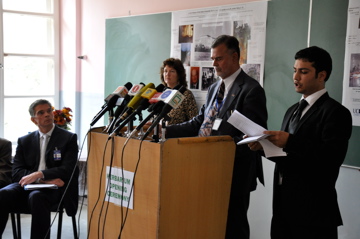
پوهنتون کابل لابراتوار نباتی را جهت حفظ میراث های نباتات افغانستان دوباره افتتاح نمود